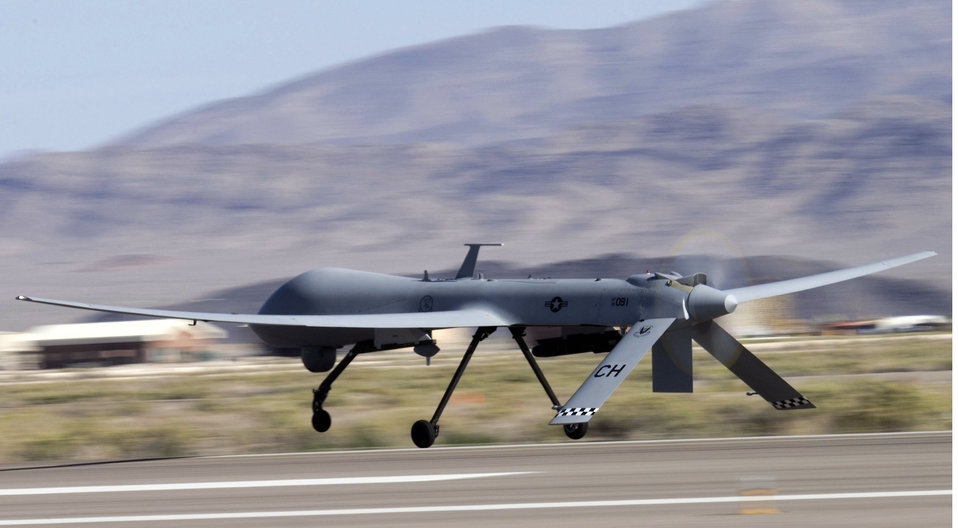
MQ-1 Predator at Creech Air Force Base, Nev.

An MQ-1 Predator unmanned aircraft assigned to the 17th Reconnaissance Squadron takes off from Creech Air Force Base, Nev., for a training mission.